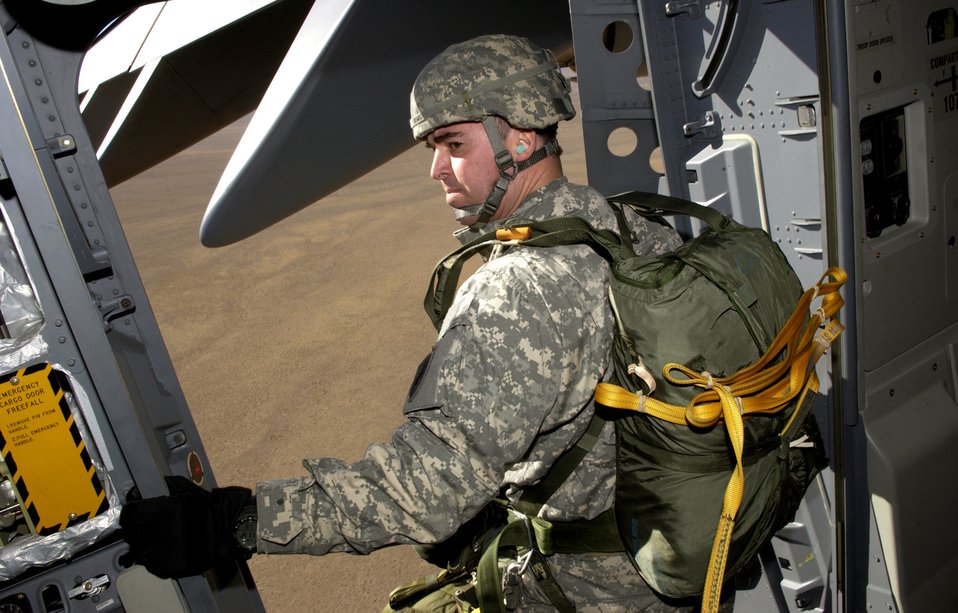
Mission Employment Exercise 06

Army Maj. George Deuel, 426th Civil Affairs Battalion, Upland, Calif. prepares to exit a C-17 Globemaster III Dec.8, during a Mission Employment Exercise held at Nellis Air Force Base, Nev. The ME Phase is the final stage of a five-and a- half month course, which trains students in their specialties. Nearly 80 aircraft from both the Air Force and Navy will participate in the nearly two-week event. Mission Employment is the final event prior to Weapons School graduation.